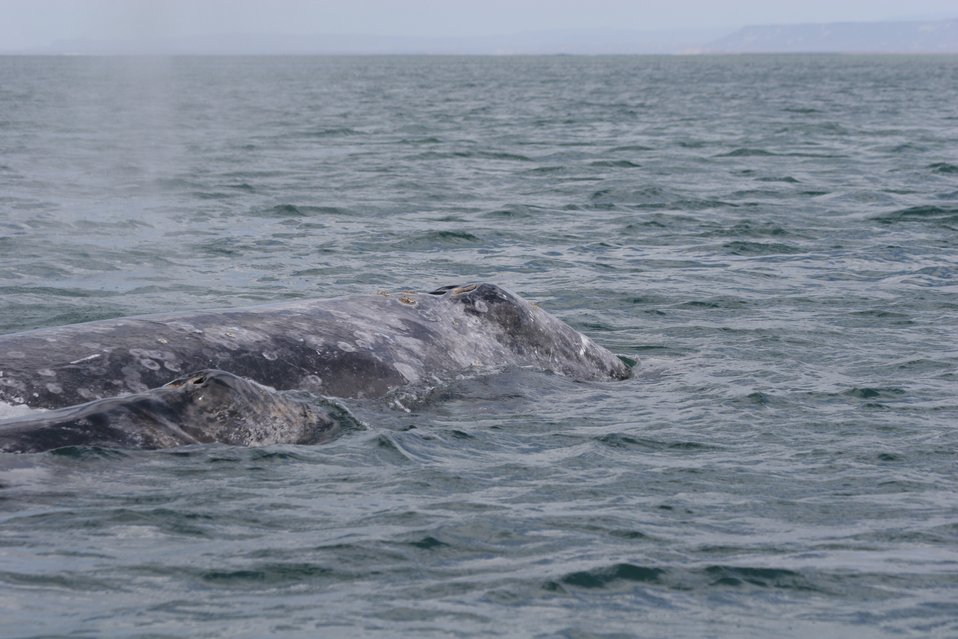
Gray whale and calf.